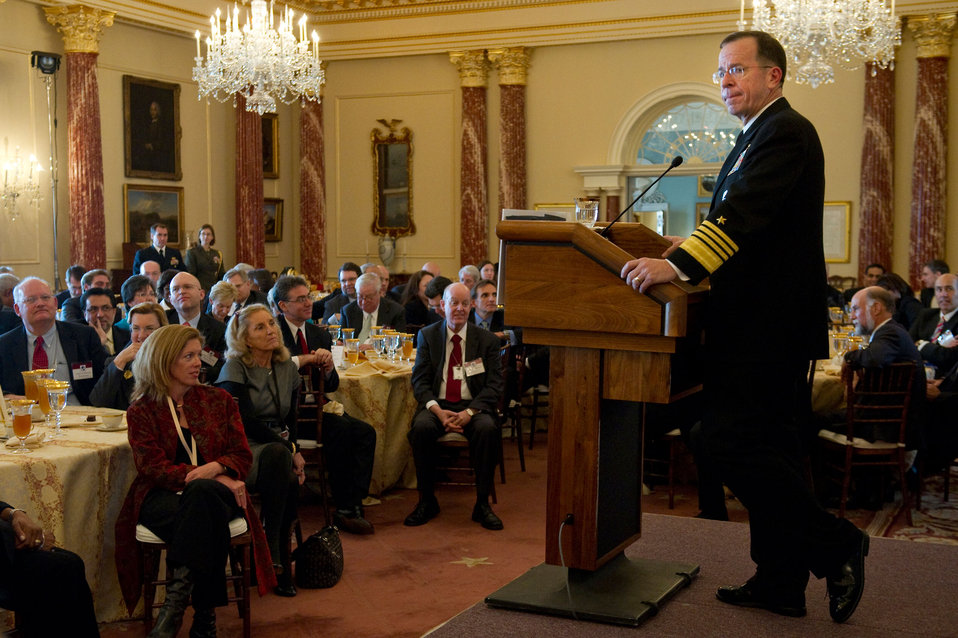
Admiral Mullen Delivers Remarks

Chairman of the Joint Chiefs of Staff, Admiral Michael Mullen, delivers remarks at the 2011 Global Chiefs of Mission Conference at the U.S. Department of State on February 2, 2011.